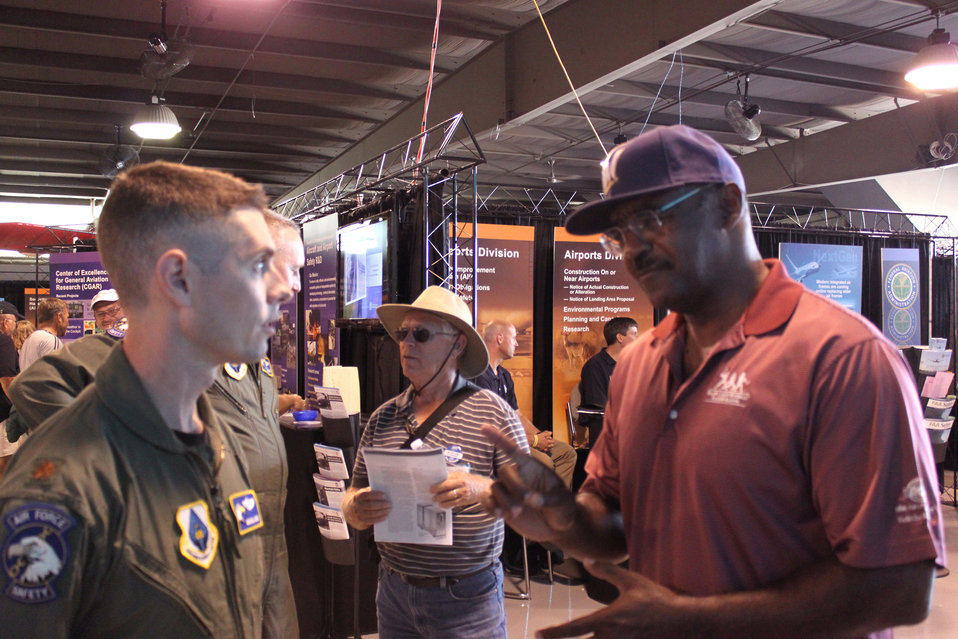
RPA safety message

Former major league baseball player Larry Hisle discusses Air Force remotely piloted aircraft operations and capabilities with Maj. Mike Conte, an MQ-1 Predator and MQ-9 Reaper pilot, July 29, 2010, during the Experimental Aircraft Association's Airventure 2010 general aviation air show at Oshkosh, Wis. Major Conte is assigned to the Air Force Safety Center at Kirtland Air Force Base, N.M.